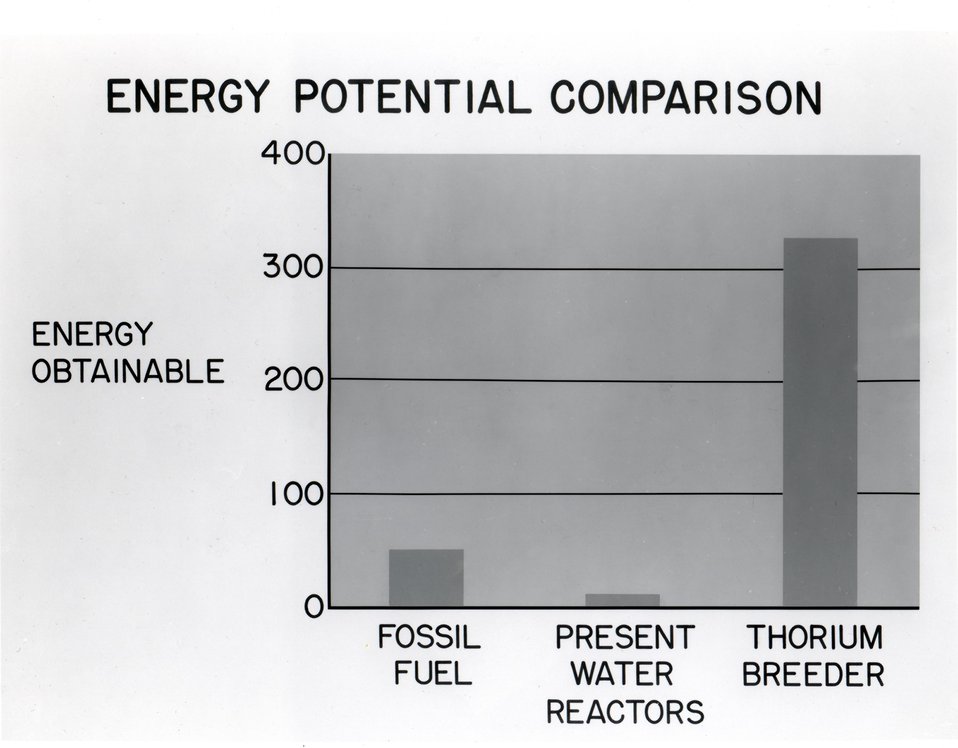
Energy potential of various types of fuel. c. undated